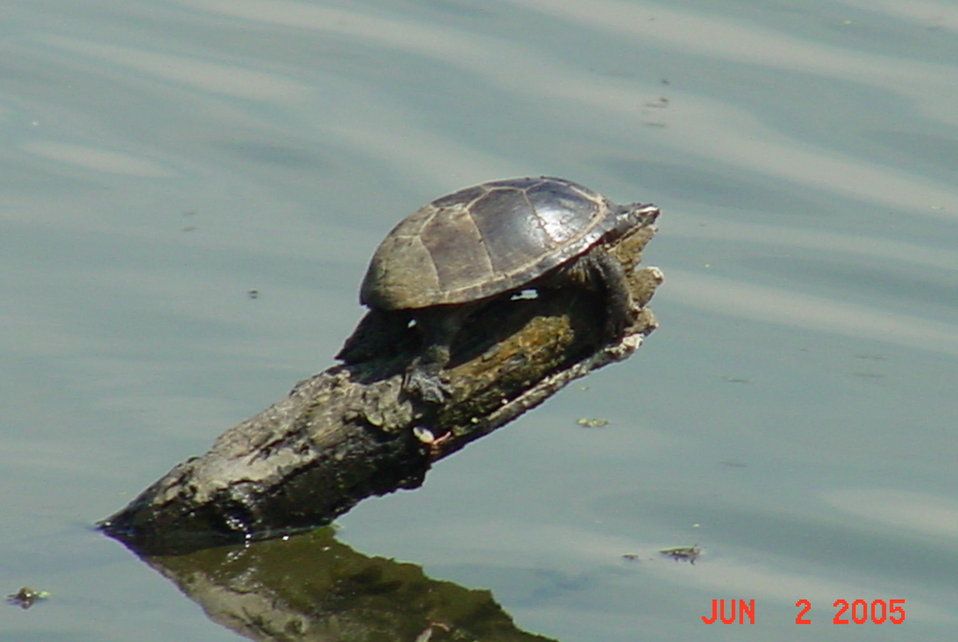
Common musk turtle basking on snag